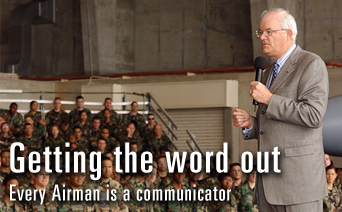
Air Force Strategic Communication Plan

Secretary Michael Wynne